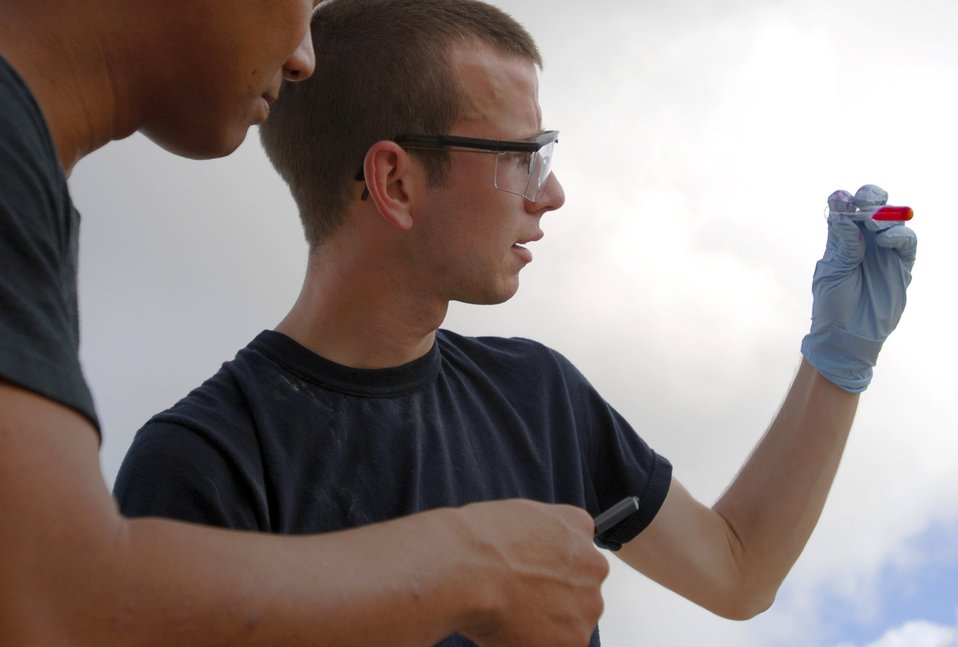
Airmen compete in training challenge

Senior Airman Seth Jones examines a chemical reaction to a substance his team extracted from the field while participating in a Chemical Biological Radiological Nuclear Challenge at Brooks City-Base, San Antonio, Sept. 15.